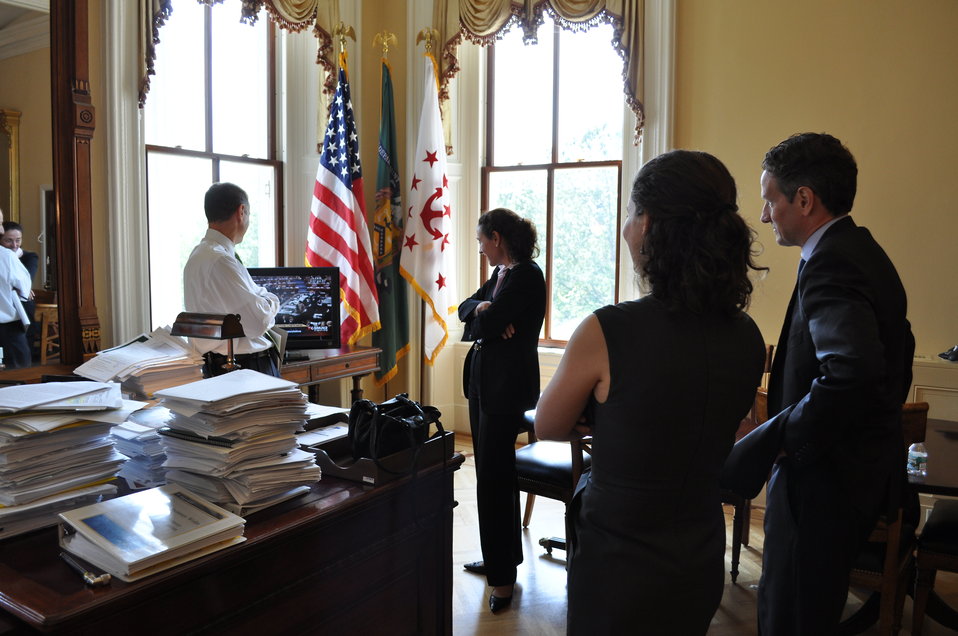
Passage of Financial Reform, 07/15/10

Treasury Chief of Staff Mark Patterson, Deputy Director of the National Economic Council Diana Farrell, Treasury aide Sara Aviel and Secretary Tim Geithner watch the Senate vote on the 'Wall Street Reform and Consumer Protection Act' on Thursday, July 15, 2010.